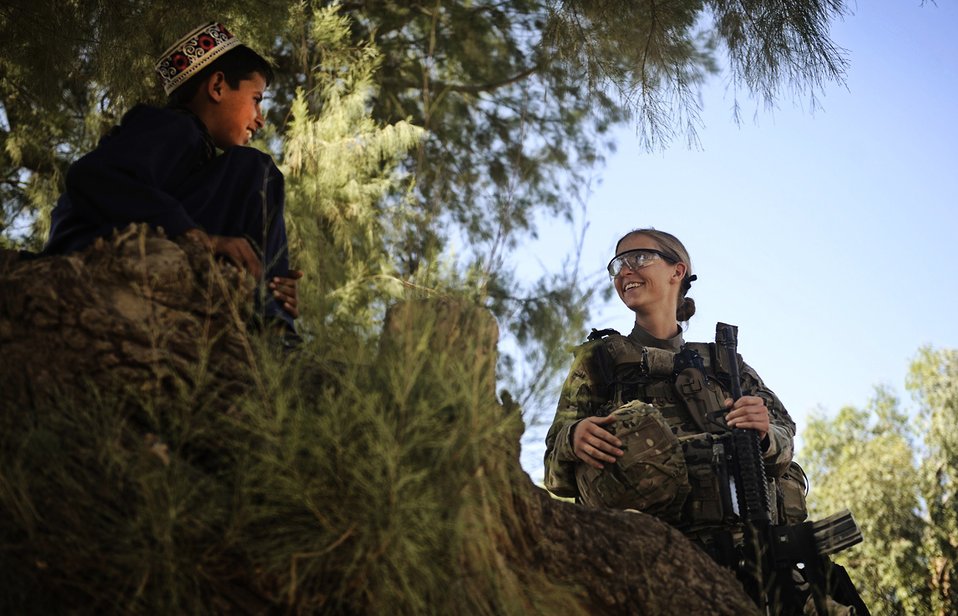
A new friend

Senior Airman Lauren Everett talks to an Afghan child Oct. 14, 2011, during a patrol in Laghman province, Afghanistan. The PRT traveled to the village of Deh E Ziarat to meet with the village elder and the people. Everett is a medic assigned to the Laghman Provincial Reconstruction Team.